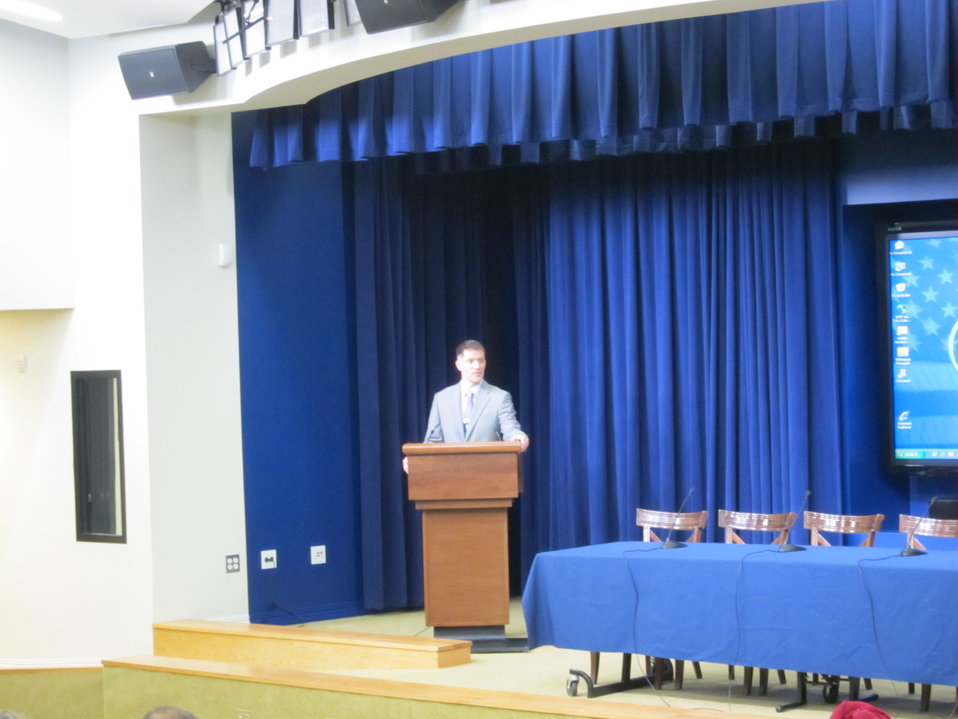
WH 2012 World Hepatitis Day Event